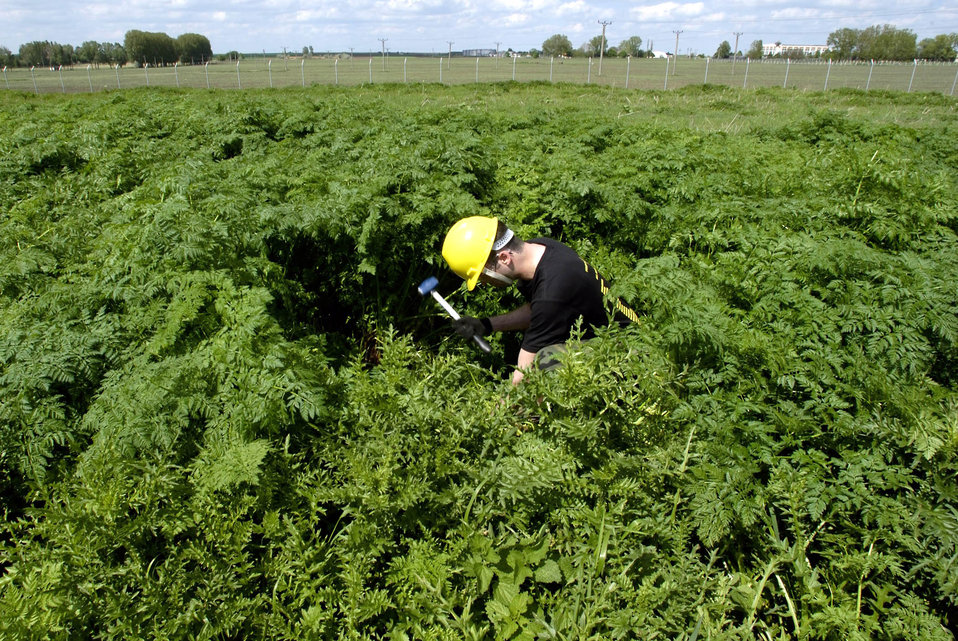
In the bushes

MIHAIL KOGALNICEANU AIRFIELD, Romania -- Senior Airmen Jason Dunigan pounds a stake into the ground here while building a 50-foot mast for exercise Combined Endeavor 2005 on May 9. Airman Dunigan is assigned to the 1st Combat Communications Squadron from Ramstein Air Base, Germany, and is preparing communications equipment to conduct more than 1,400 interoperability tests.